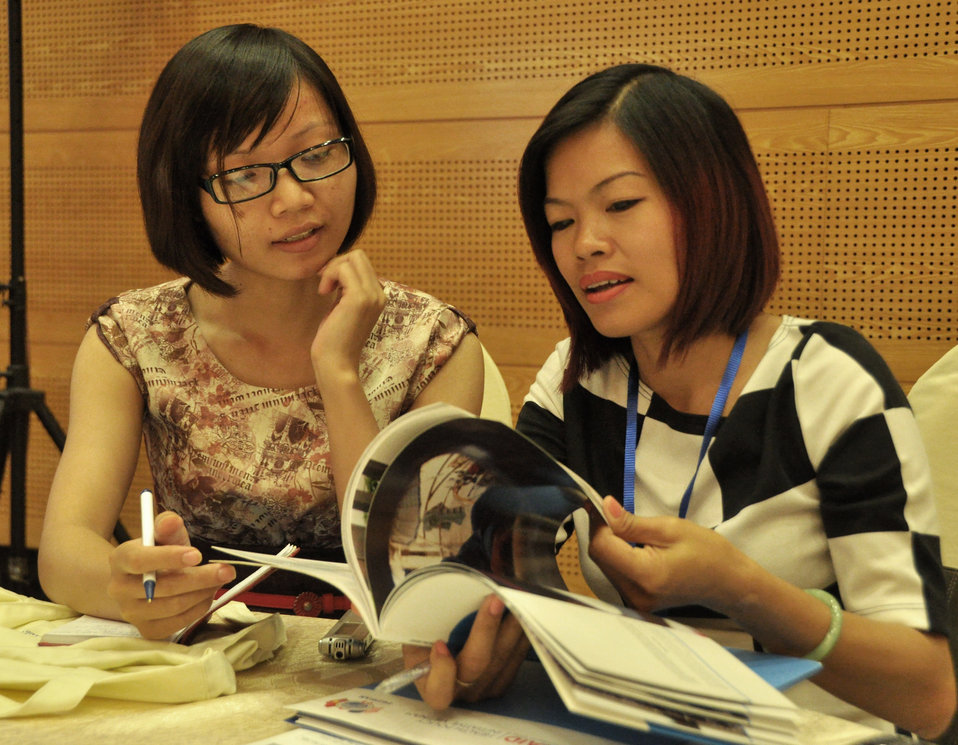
USAID Health Policy Initiative End of Project Workshop

Hanoi, August 14, 2013.